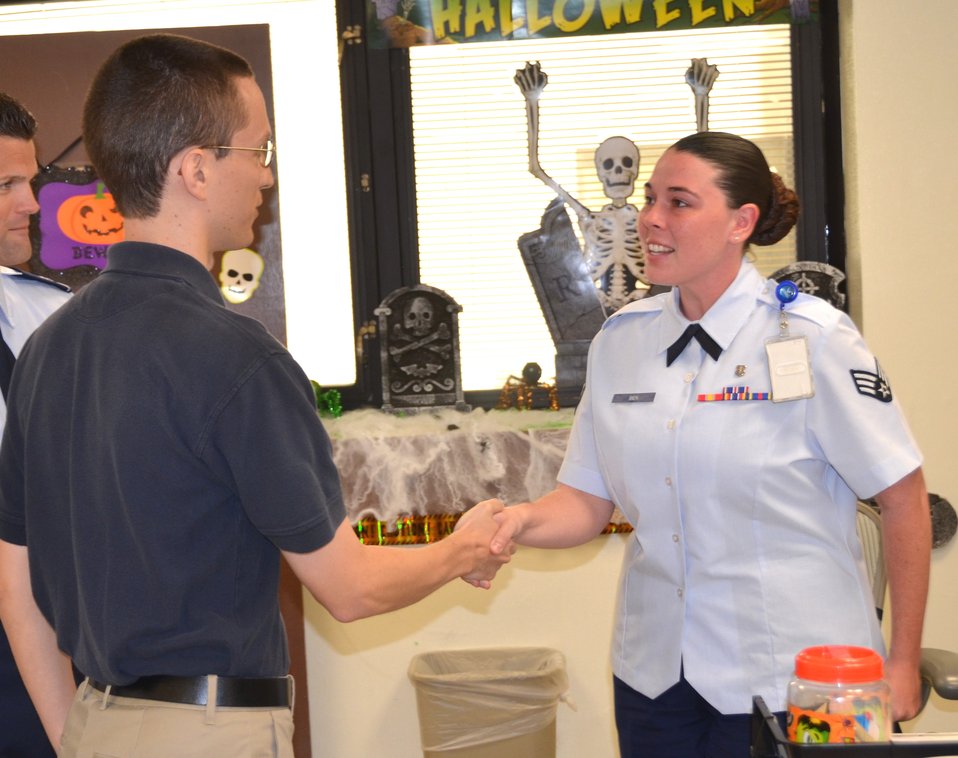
His brother's keeper

Adam Bond, center, thanks Senior Airman Ciara Bien at Keesler Air Force Base, Miss., Oct. 22, 2012, for her actions following an Oct. 20 accident that involved his brother, as Lt. Col. Tommy Franklin, acting 81st MDSS commander, looks on. Bien is with the 81st Medical Support Squadron and Bond is a photographer with KMAR Industries at Keesler Air Force Base.